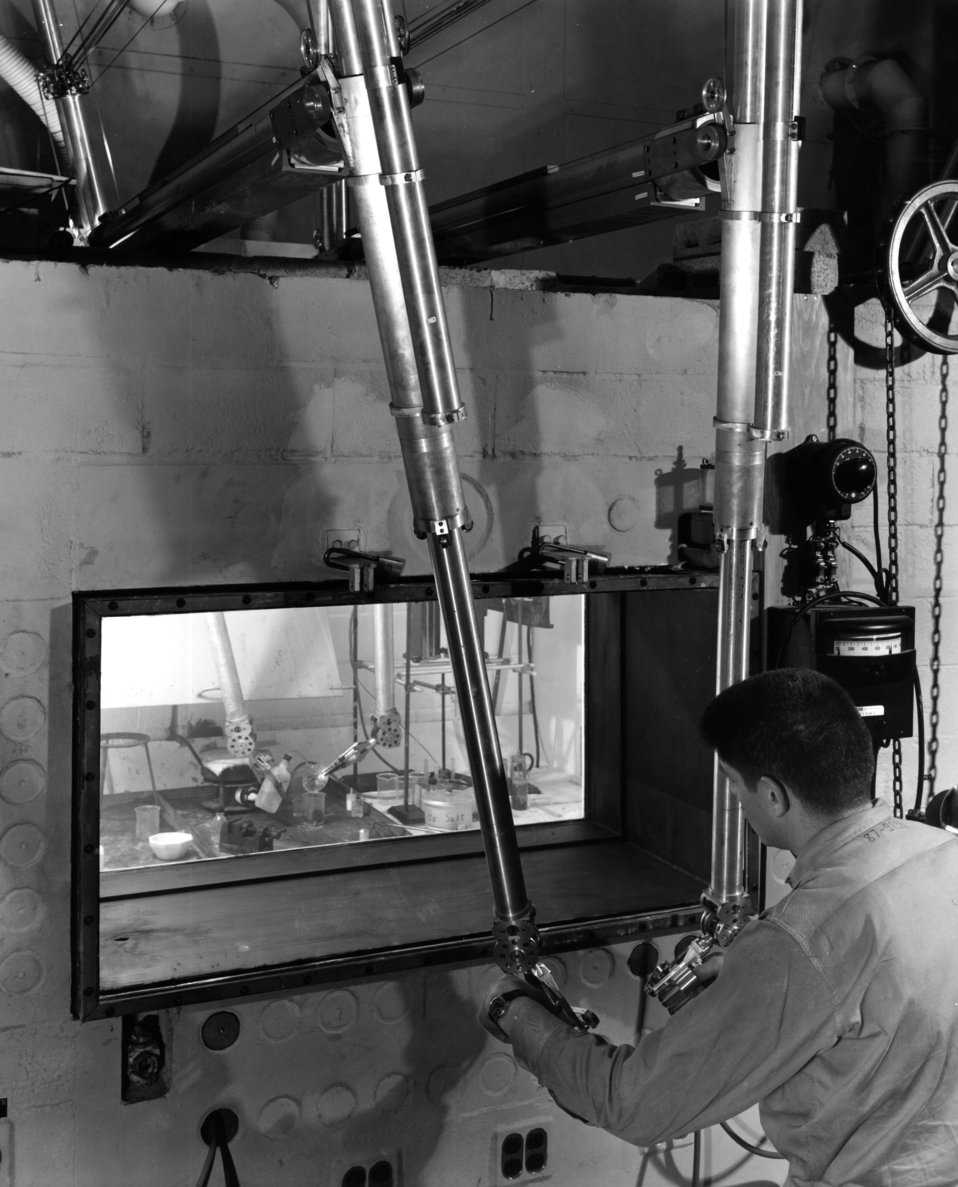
Mechanical Hands Manipulators ORNL

7695 Ed Westcott 2-5-1952 Routine BY REMOTE CONTROL- In the Physics of Solids Building at Oak Ridge National Laboratory, a step in preparation of a solid sample of extremely radioactive material for analysis is concluded as the scientist, separated from his work by concrete barrier and liquid-filled porthole, uses manipulators, or 'mechanical hands,' to wash his equipment. The human-like hands in cell respond to slight pressure or movement of man's hands as, by remote control, he squeezes plastic bottle of acid and squirts fluid through tube to wash cover glass. The acid dissolves and recovers radioactive material adhering to the surface. ORNL is operated by Carbibe and Carbon Cemicals Co., a division of Union Carbibe and Carbon Corporation. Oak Ridge Tennessee